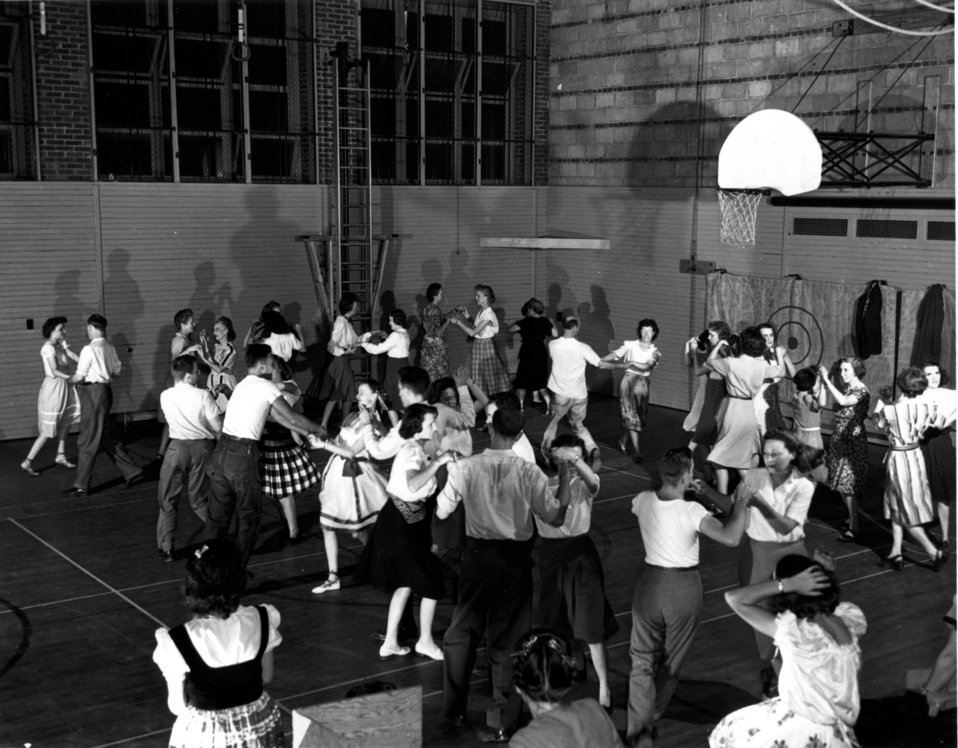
Recreation at Oak Ridge